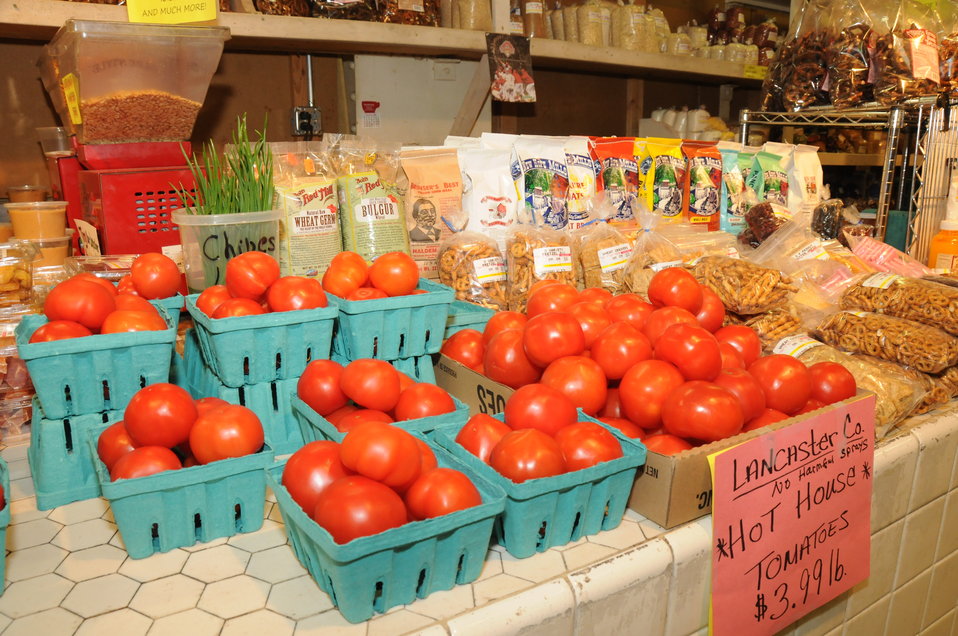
The Reading Terminal Market offers produce fresh from the field to the people of Philadelphia, PA on April 3, 2009. There are Amish specialties, fruits, vegetables, meats, seafood, and poultry. Reading Terminal Market opened for business in 1892 with approximately 78,000 square feet and almost 800 spaces for vendors. The Market was revitalized in the 1990’s and today is still the gastronomic bazaar that its original planners had envisioned. Many of the historic Market stands survived the reconstruction and are once again filled with local produce, fresh eggs, milk, meats, poultry, seafood, handmade crafts, jewelry, and clothing. The Market is home to more than 80 merchants, two of whom are descendants of the original stand holders from a century before.